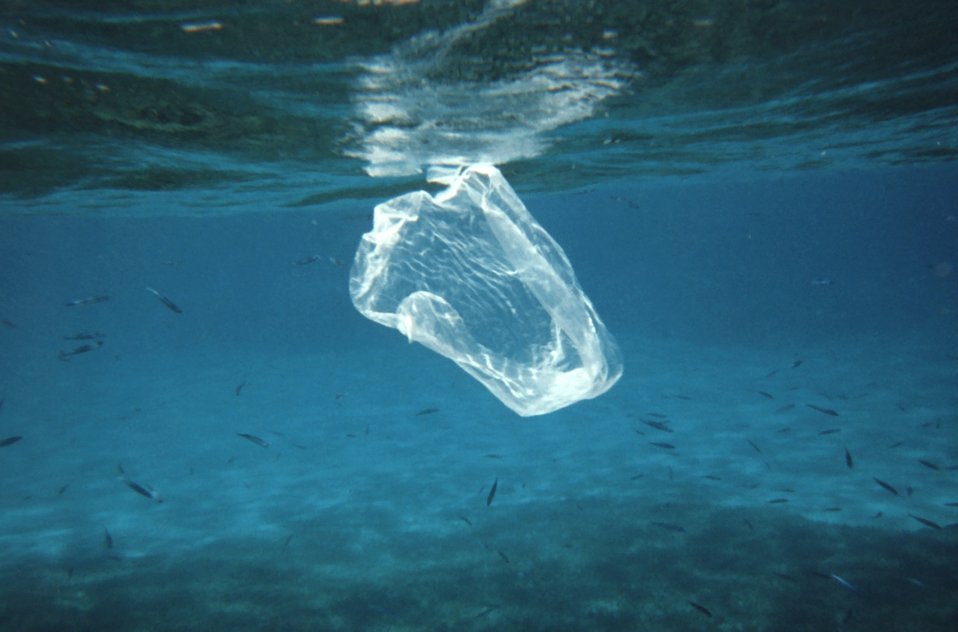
Plastic sandwich baggy floating in the water column. Fish that feed on various salps, jelly-fish, etc. mistake such trash for food and can ingest this with fatal consequences. Compare to images reef2130, reef0859, and reef0556.